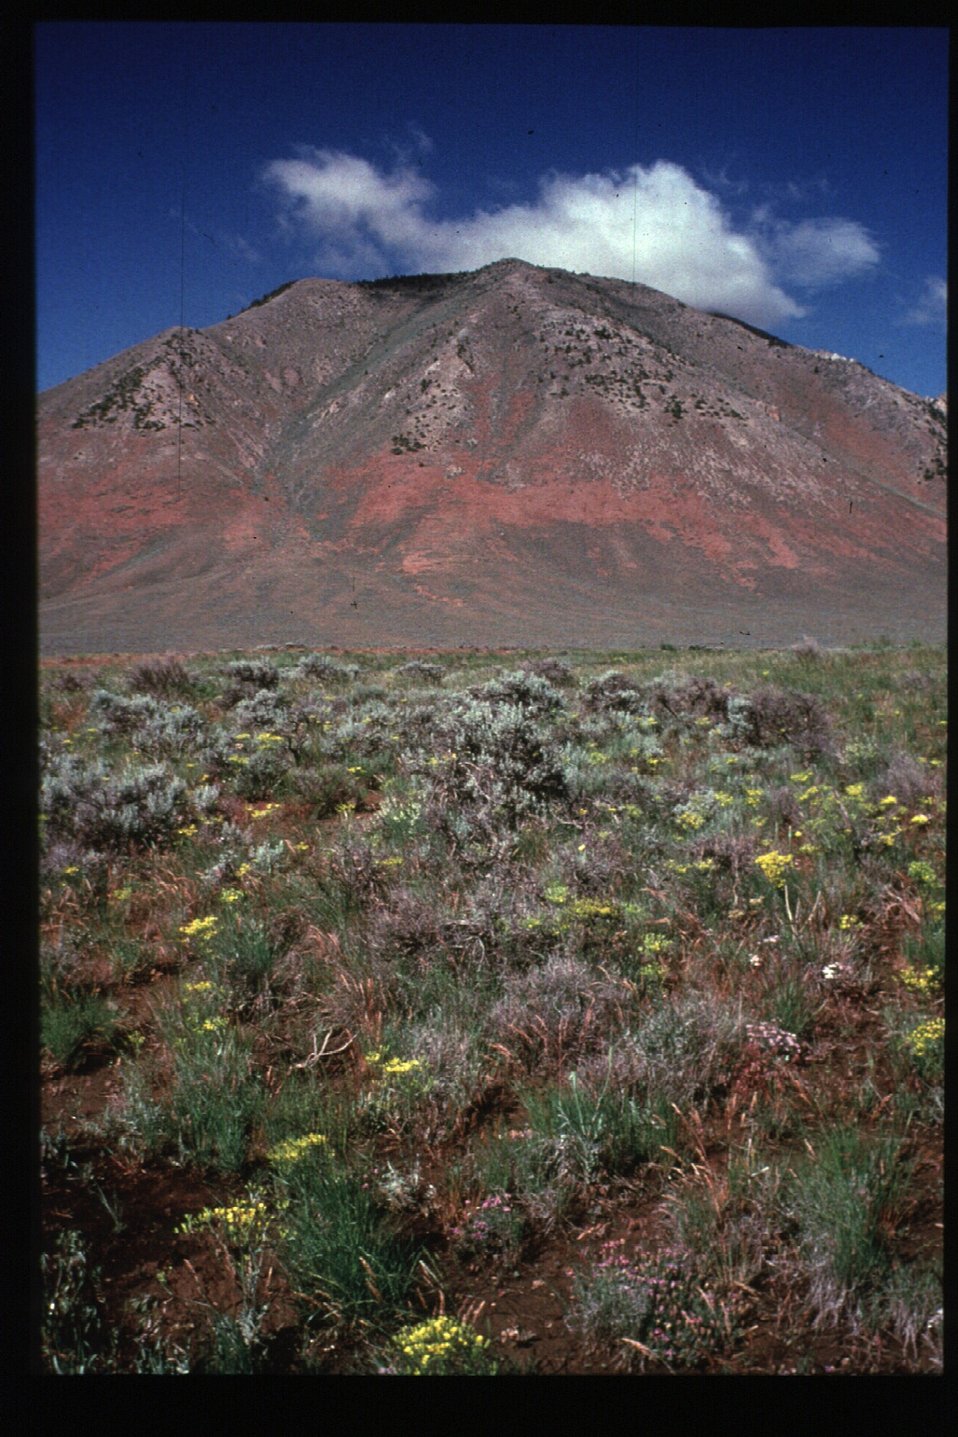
South Fork of Snake River Idaho Falls Field Office USRD Upper Snake River District